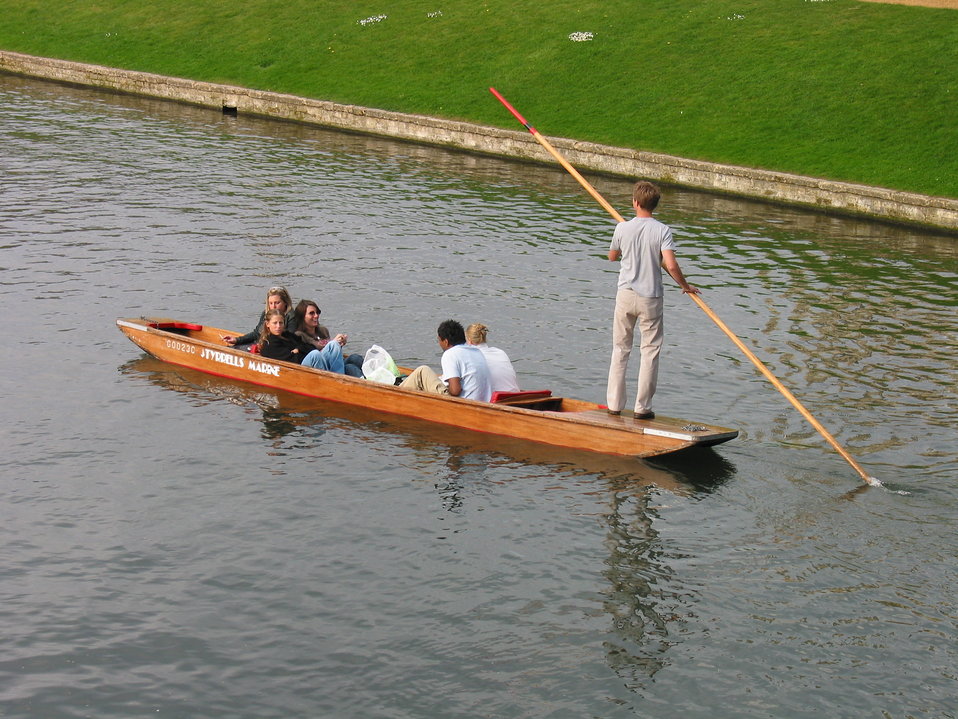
Punting at Cambridge, England